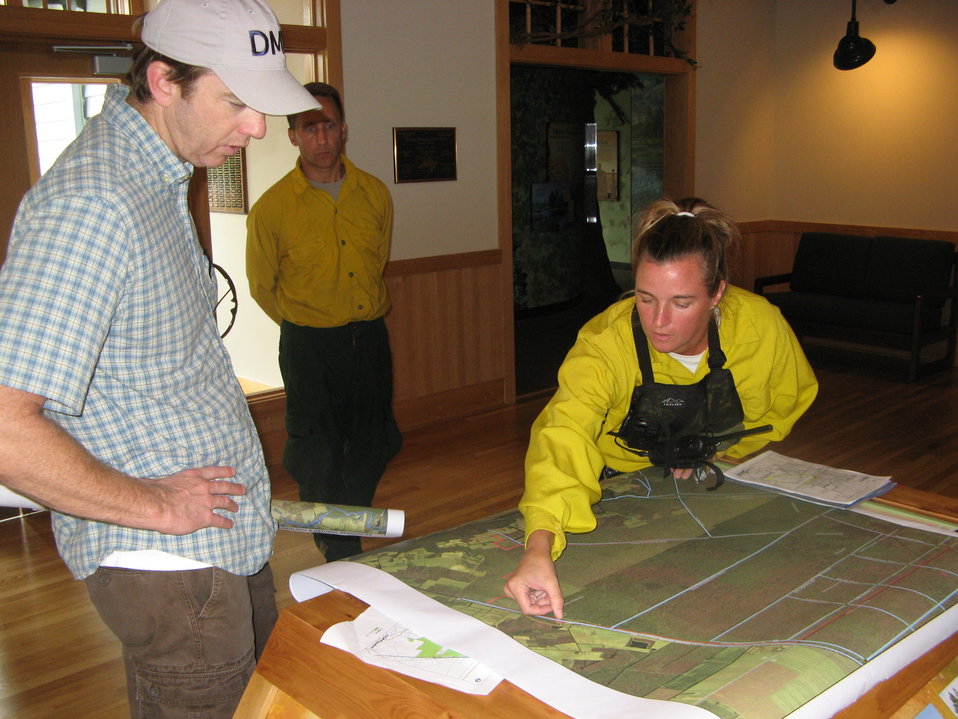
Visit to Dismal Swamp Sate Park

South Mills, NC, August 2011. Dismal Swamp State Park Superintendent Joy Greenwood orients David McNight, Assistant Secretary for the North Carolina Department of Environment and Natural Resources. McNight toured some of the approximately 200 acres of the park that burned in the Lateral West Fire in Great Dismal Swamp.